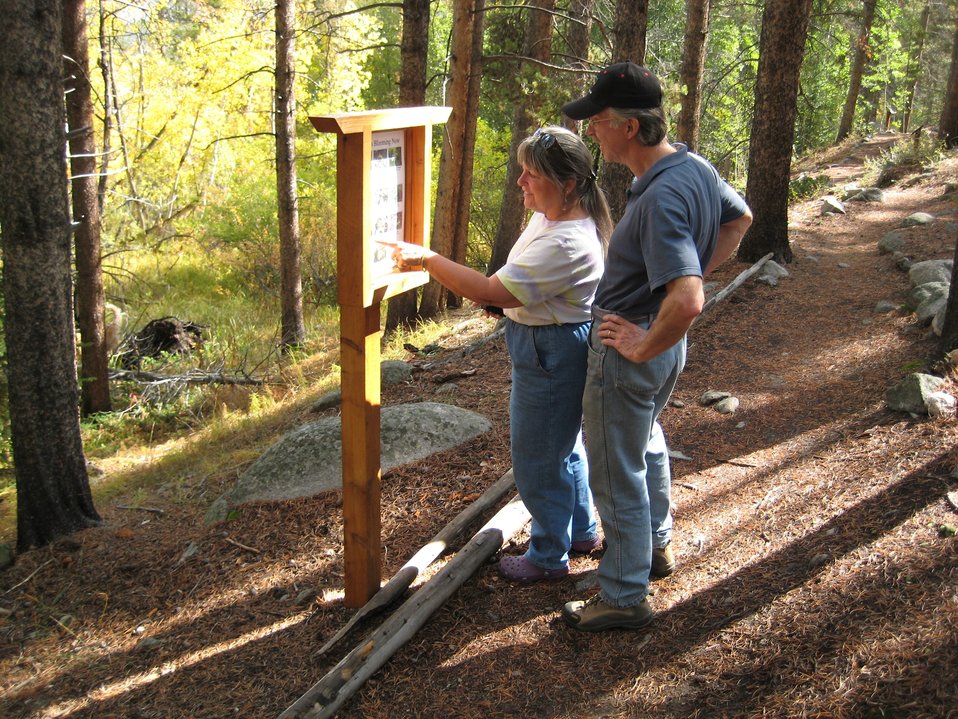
Visitors observe Nature Trail signs

Evergreen Lakes Nature Trail at the Leadville National Fish Hatchery (NFH) in Colorado is a great place to take the whole family! On this one-mile trail loop you will find various nature signs describing the surrounding vegetation and animals inhabiting the area. Other recreational oppportunities to take advantage of at Leadville NFH are fish viewing and feeding, a picnic/playground area, wildlife and birdwatching, wilderness trails, mountain biking, cross country skiing and snowshoeing.